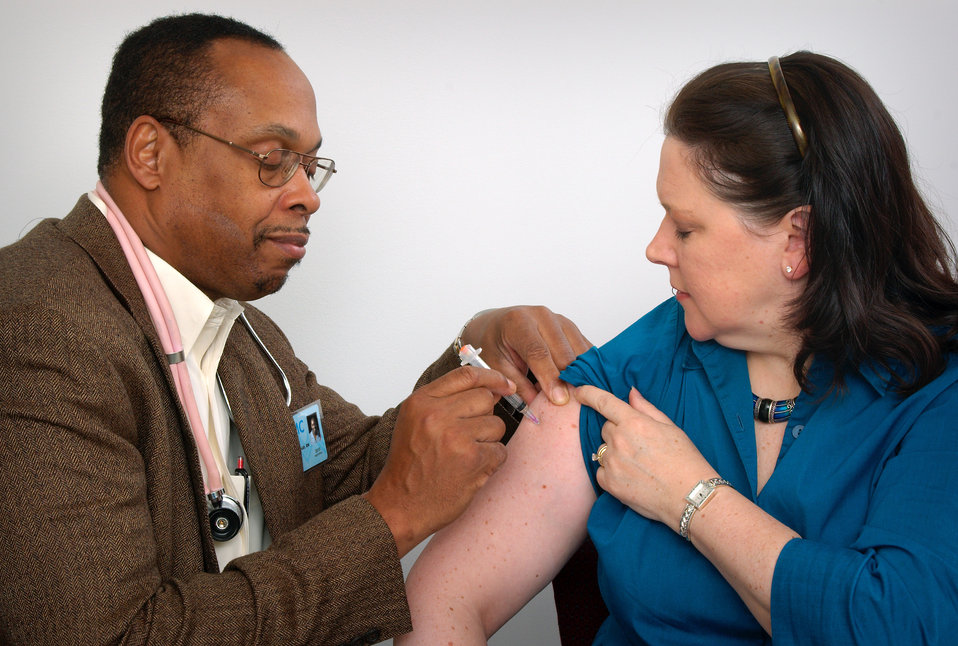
In this image, a qualified healthcare practitioner was in the process of administering an intramuscular immunization to a woman, using the woman's right shoulder muscle as the injection site. The woman was assisting in the procedure by lifting up her blouse sleeve, while the physician immobilized the injection area with his free hand.